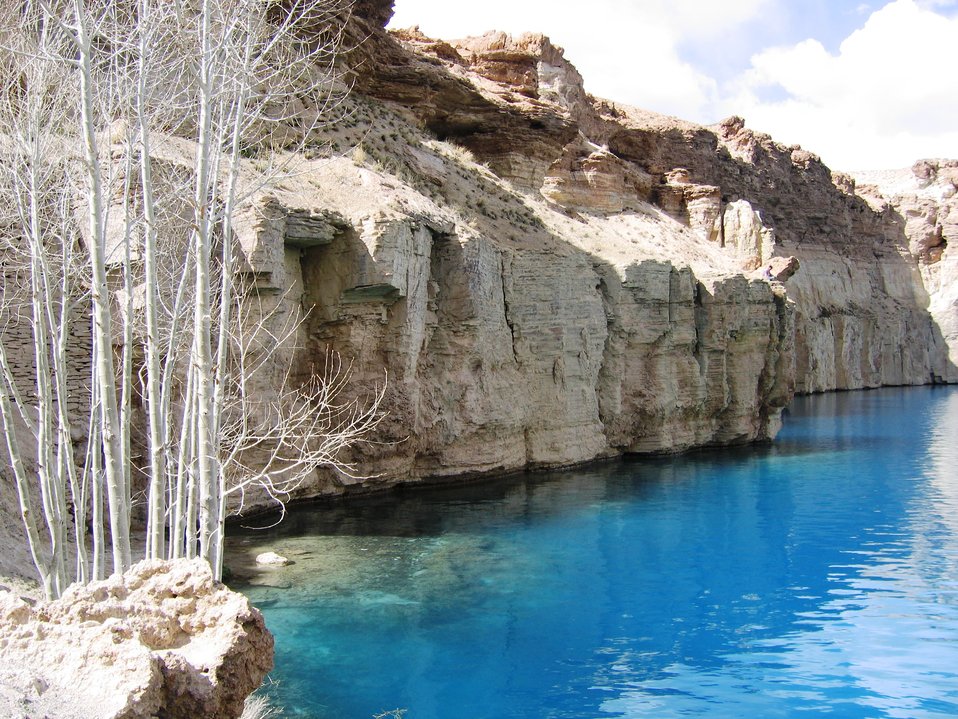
bamiyan 042908-oc 043

The beauty of the area’s six cobalt-blue Band-e-Amir lakes always stuns visitors to central Bamyan province. Natural travertine dams, created by calcium deposits over many years, support the lakes. They stretch across the valley in long graceful arcs, and merge into a strikingly beautiful landscape of stone, desert, and water. The vistas rival those of national parks anywhere in the world.
USAID, through its implementing partner the Wildlife Conservation Society (“WCS”), has been working since 2006 to develop the institutions and foster the consensus needed for the formation of a national park in the lakes area. The efforts ultimately resulted in the Earth Day declaration in 2009, of Band-e-Amir as Afghanistan’s first national park by the Director General of Afghanistan’s National Environmental Protection Agency (NEPA).
Afghanistan’s Environment Law requires local management of protected areas. To fulfill that mandate, WCS initially educated the residents in the 13 villages located within the territory of the park about the economic opportunities that national park status would provide. The Band-e-Amir Protected Area Committee (BAPAC) recruited villagers to be members. BAPAC and WCS jointly prepared a management plan for the park, and WCS assisted local officials in successfully navigating the national park proposal process.
With USAID support, WCS is now training rangers to protect the flora and fauna in the park, and is educating the provincial and national government officials who must manage park operations and ensure sustainability. WCS continues to help the government develop laws and policies on protected areas and species, and community-based natural resource management.
In anticipation of national park status, local entrepreneurs had already begun building small shops, restaurants, and hotels to serve tourists. USAID-funded partners provided guidance to help them place these structures away from the most ecologically sensitive areas. Now that the park has achieved official status and protection, the local people will have the opportunity to protect, preserve, and profit from this beautiful landscape.